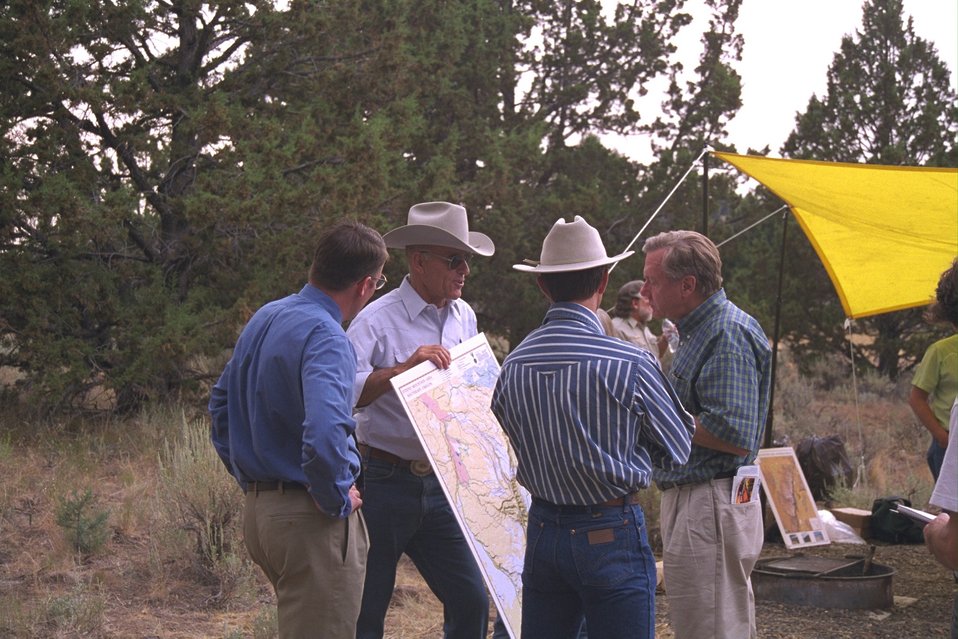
Troy Nichols (Gordon Smith's aide), Doc Hatfield, Stacie Davies, and Secretary Babbitt discuss the Steens designation.